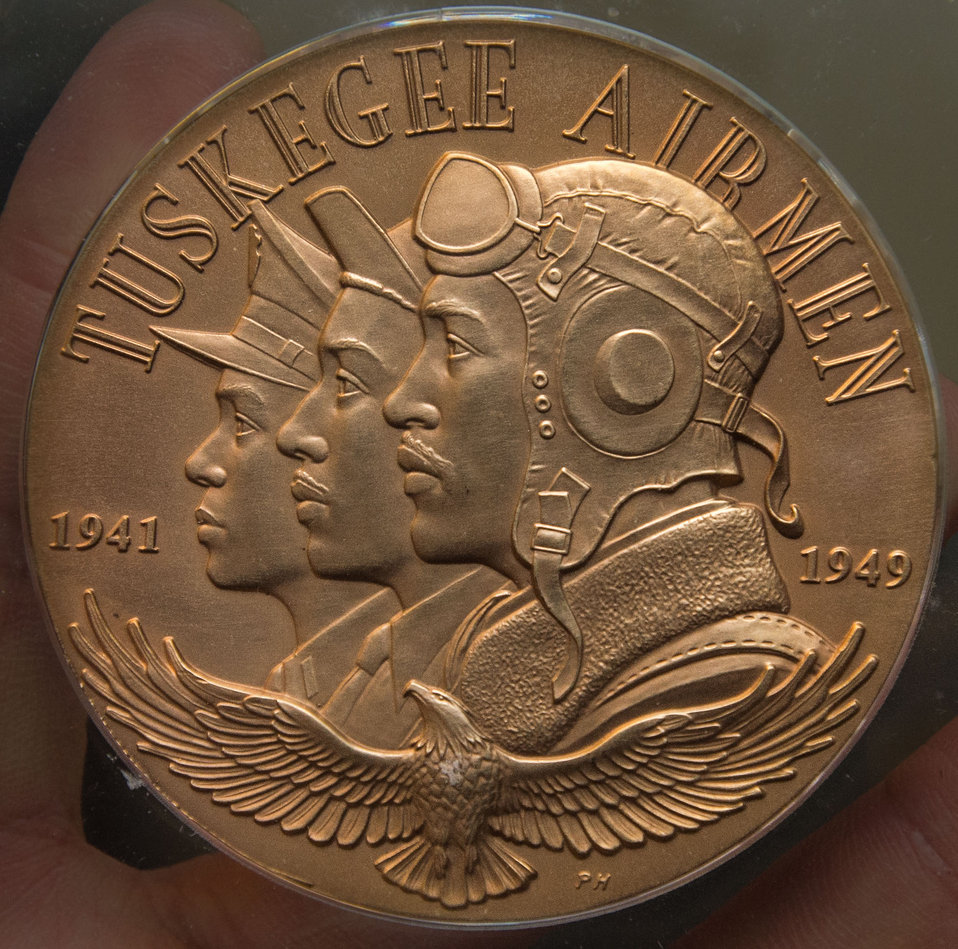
This plaque honors the service of the Tuskeegee airmen in World War II. The U.S. Department of Agriculture (USDA) Office of the Assistant Secretary for Civil Rights (OASCR) hosted the “In conversation With Tuskegee Airmen” event to honor the airmen’s successes both overseas and at home at USDA in Washington, D.C. on Thursday Mar. 27, 2014. Retired U.S. Air Force (USAF) Pilot Colonel Charles Edward McGee, Tuskegee Airmen Incorporated (TAI) National Historian William F. Holton and USAF Historical Research Agency Organizational Histories Branch Chief Daniel L Haulman were guest speakers at the event. Mr. Haulman presented the history of the first black military flying unit, Col. McGee recounted his experiences in the Army Air Corp (later Army Air Force and U.S. Air Force) starting in the 1940’s and Mr. Holton spoke about his time in the U.S. Navy. Questions from the audience provided several opportunities to open the discussion about civil rights challenges and how they achieved success and respect.